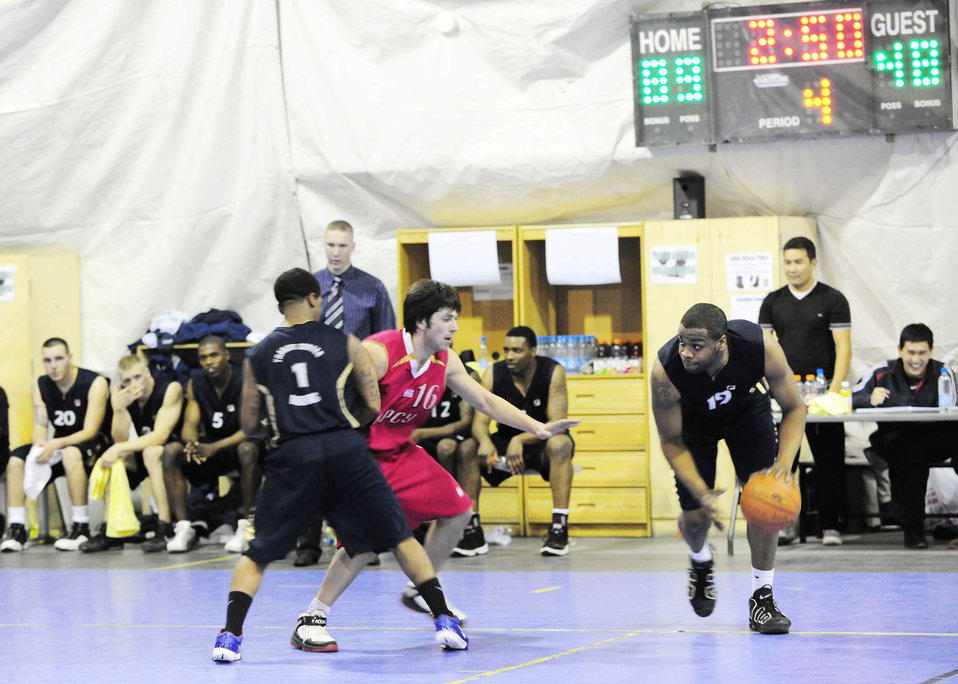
Transit Center Airmen compete against Kyrgyz in basketball game

Christopher Williams uses teammate Brandon Boswell to set up a screen and get around a Kyrgyz Russian Slavic University defender during a basketball game Jan. 5, 2010, at the Transit Center at Manas. Williams is a 376th Expeditionary Security Forces Squadron security journeyman. Boswell is a communications security contractor with the 376th Expeditionary Communications Squadron. The Transit Center at Manas team defeated the KRSU team, 93-51.